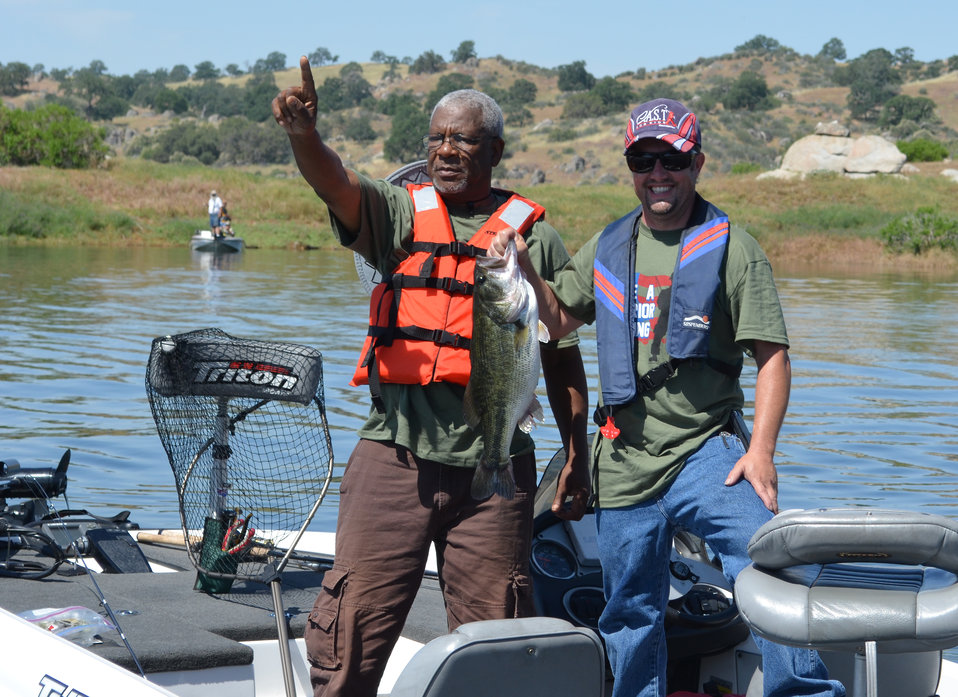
'Take a Warrior Fishing' event at Eastman Lake

A veteran and a local volunteer showoff their catch during the 'Take a Warrior Fishing' event at Eastman Lake, Calif., May 12, 2012. The event was the first of its kind for the U.S. Army Corps of Engineers Sacramento District.